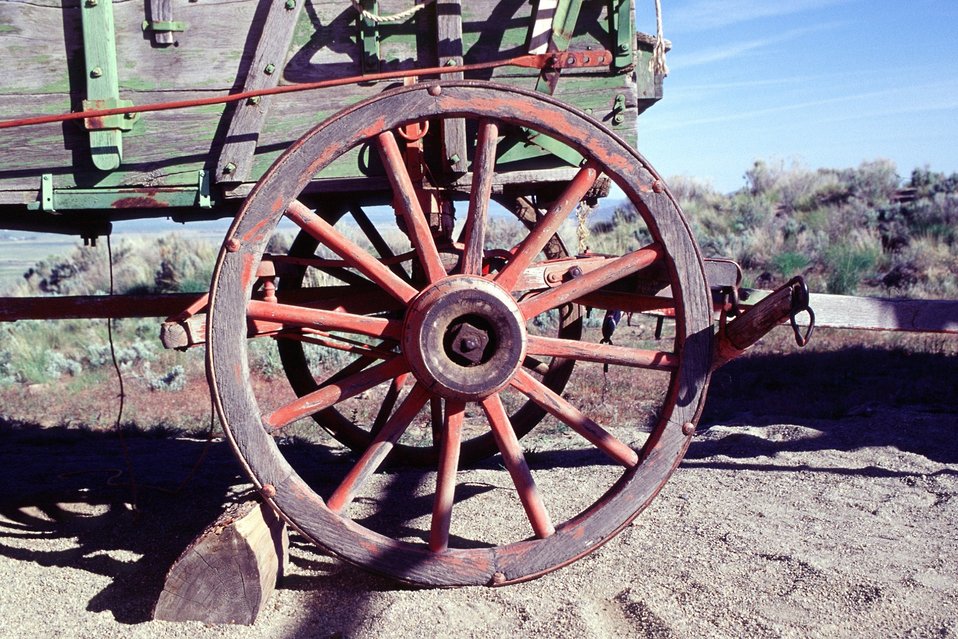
NHOTIC 10th Anniversary. Wheel from covered wagon.